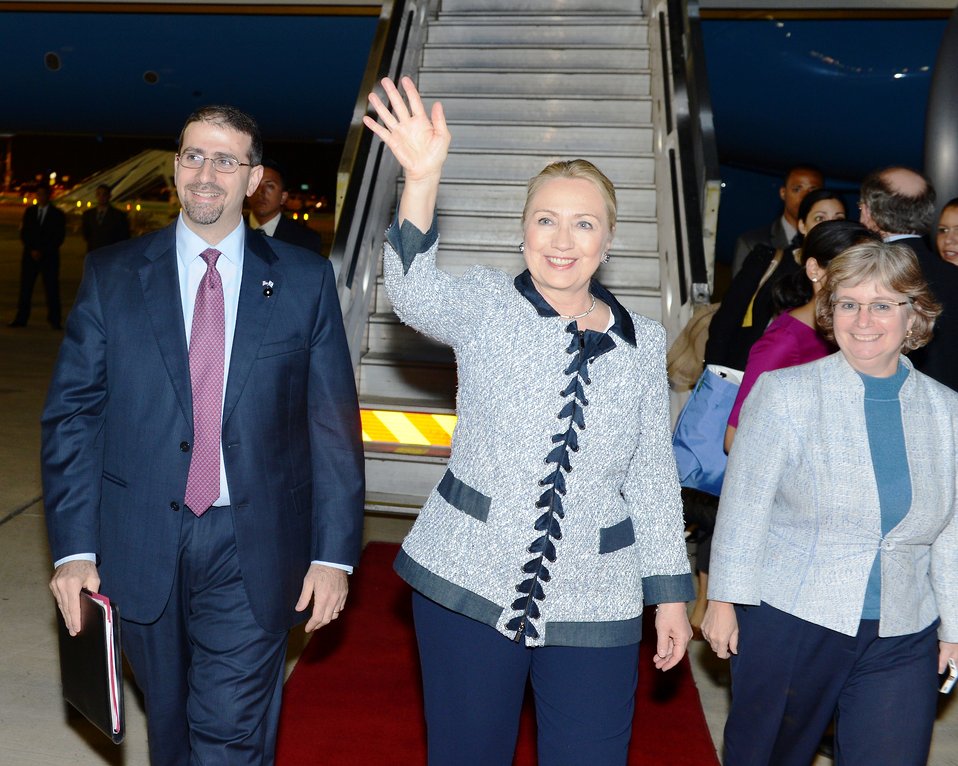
Secretary Clinton Arrives in Jerusalem

U.S. Secretary of State Hillary Rodham Clinton, accompanied by U.S. Ambassador to Israel Daniel Shapiro, left, arrives in Jerusalem, November 20, 2012.